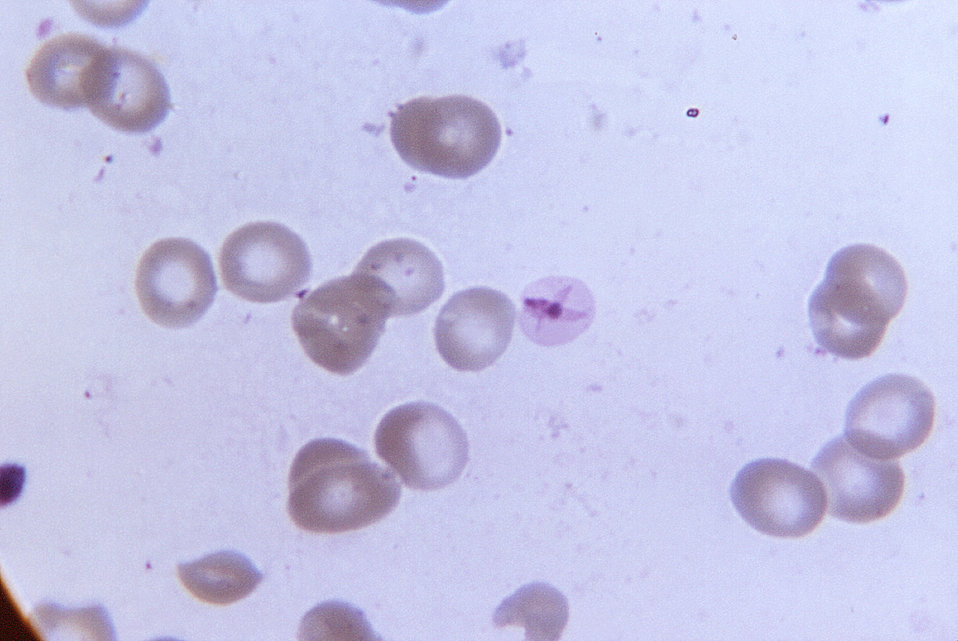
This photomicrograph revealed some of the ultrastructural morphology exhibited by a ring-form, Plasmodium falciparum malarial parasite, which was found in a blood sample from a patient who had been treated with an unknown therapeutic agent.